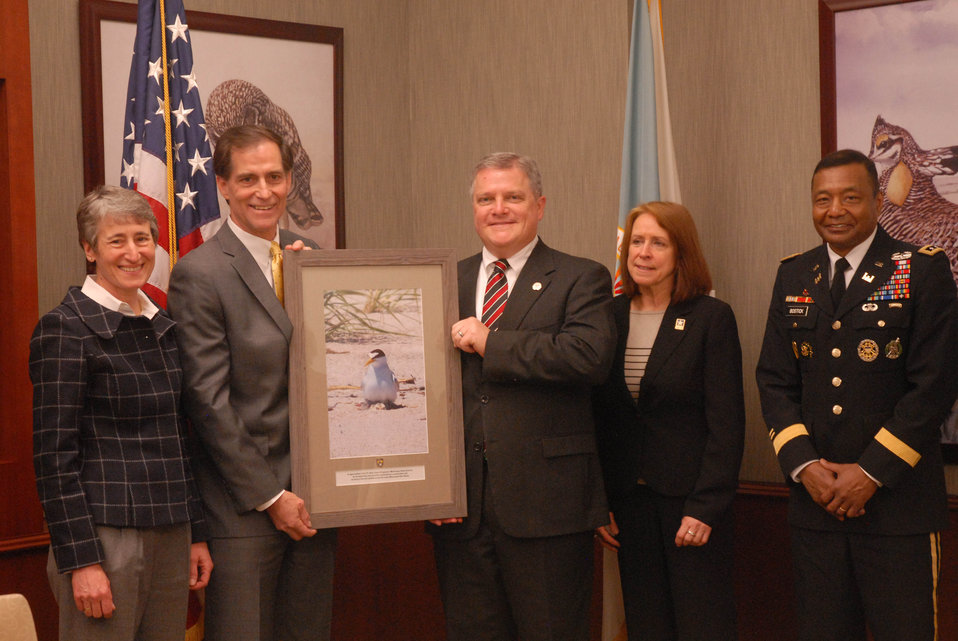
DOIFWS-Corp3

Secretary of the Interior Sally Jewell, U.S. Fish and Wildlife Service director Dan Ashe recognize Eddie Belk, Director of Programs, Mississippi Valley Division U.S. Army Corps of Engineers, Assistant Secretary of the Army for Civil Works Jo-Ellen Darcy, and U.S. Army Corps of Engineers commanding general Lt. Gen. Thomas P. Bostick for an innovative landscape-level conservation approach. (Shown: Commemorative photo with plaque of Interior least tern with chick on nest) Photo by Tami Heileman, DOI (public domain photo)
APRIL 30, 2014

Contacts: USFWS: Tom MacKenzie, 404-679-7291, tom mackenzie@fws.gov
USACE: Gene Pawlik, 202-761-7690, Eugene.A.Pawlik@usace.army.mil

U.S. Fish and Wildlife Service Director Honors U.S. Army Corps of Engineers for Innovative Landscape-Level Conservation Approach

Washington D.C. – U.S. Fish and Wildlife Service Director Dan Ashe yesterday praised a collaborative effort across the lower Mississippi River Basin with the U.S. Army Corps of Engineers (USACE) that has helped advance conservation for three endangered species.

The collaboration highlights the responsibility and opportunity for all federal agencies to conserve endangered and threatened species under the Endangered Species Act (ESA). This joint effort by the Corps and the Service proves that by working to incorporate the needs of threatened and endangered species in the work that they do, federal agencies can help species recover.

Specifically, it lays the foundation for broad habitat conservation actions that will help scientists meet population objectives more quickly for the Interior least tern, pallid sturgeon and fat pocketbook mussel. The resulting habitat improvements will also benefit other fish and wildlife reliant on the Mississippi River Basin.

Both the overall approach and the techniques the agencies have developed under it can be implemented nationwide.

“The U.S. Fish and Wildlife Service and the U.S. Army Corps of Engineers are seeing positive conservation results already thanks to steps included in this cost-effective approach,” said Ashe. “This is significant as it demonstrates that conservation can coexist with transportation, national security, and the region’s economic needs.”

The success stems from progressive steps the Corps and Service took under Section 7(a)(1) of the ESA that helped pave the way for subsequent consultations under the act. The end result was a transformation of the Corps’ Channel Improvement Program – a flood control and navigation strategy from a primary threat into a primary conservation tool for the three listed species. The Corps is using water and sediment that previously flowed directly down the river to now enhance aquatic habitats in the lower Mississippi River Basin. This will provide better opportunities for Americans to fish, bird watch and boat on one of our nation’s greatest rivers. Not only will the listed species benefit, so will recreational species such as bass, catfish and crappie, boosting local economies.

'Together the U.S. Army Corps of Engineers and US Fish and Wildlife Service have built a foundation for future cooperation,” said Assistant Secretary of the Army for Civil Works Jo-Ellen Darcy. “This harmonious approach will avoid huge amounts of work and money for both agencies moving forward, all while best serving the Interior Least Tern, the pallid sturgeon and the fat pocketbook mussel.'

Thanks to the steps taken that are included in this plan, the population status of all three species is improving. Indeed, a recently completed five-year review for the Interior least tern recommended delisting it due to recovery, citing an increase in the tern population from 6,000 to 10,000 birds. The Service is now in the process of putting in place the necessary monitoring plans, conservation agreements, and population models in hopes of moving forward with a proposed delisting in the near future.

“The U.S. Army Corps of Engineers appreciates this recognition today of the successful collaboration between our agencies and specific contributions by USACE team members,” said Lt. Gen. Thomas P. Bostick, U.S. Army Corps of Engineers commanding general. “The Corps of Engineers, together with our partners, is committed to a 200-year vision for the Mississippi Watershed – America’s Watershed – that balances the Nation’s needs, such as flood risk reduction and management, environmental sustainability, and recreation. The Lower Mississippi Conservation Plan is a stellar example of that commitment.”

The approach has also been credited with expanding the fat pocketbook mussel population into new areas and with increased pallid sturgeon numbers, all with no negative effects on critical flood control or navigation missions.

“This is really a milestone in conservation thinking and planning,” said Ashe. “It goes to show that when agencies plan ahead for conservation, it pays off all around, both in terms of saving money and staff time, as well as benefiting our nation’s wildlife resources for the American people.”

The Service is using the success of the Corps’ Mississippi Valley Division conservation program to bolster efforts to expand this approach nationwide for both agencies and is looking at similar opportunities with other federal agencies.

About The U.S. Fish and Wildlife Service
The mission of the U.S. Fish and Wildlife Service is working with others to conserve, protect, and enhance fish, wildlife, plants, and their habitats for the continuing benefit of the American people. For more information on our work and the people who make it happen, visit www.fws.gov. Connect with our Facebook page at www.facebook.com/usfwssoutheast, follow our tweets at www.twitter.com/usfwssoutheast, watch our YouTube Channel at www.youtube.com/usfws and download photos from our Flickr page at www.flickr.com/photos/usfwssoutheast.